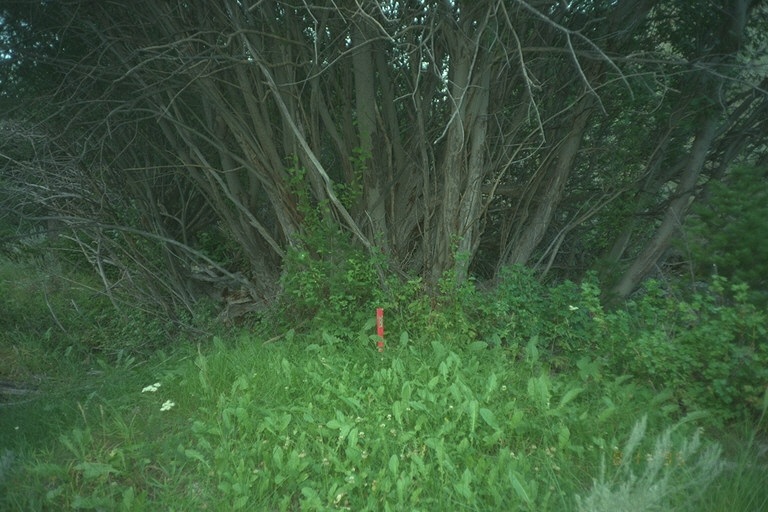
Riparian area Public Lands Salmon Field Office UCSC Upper Columbia Salmon Clearwater District